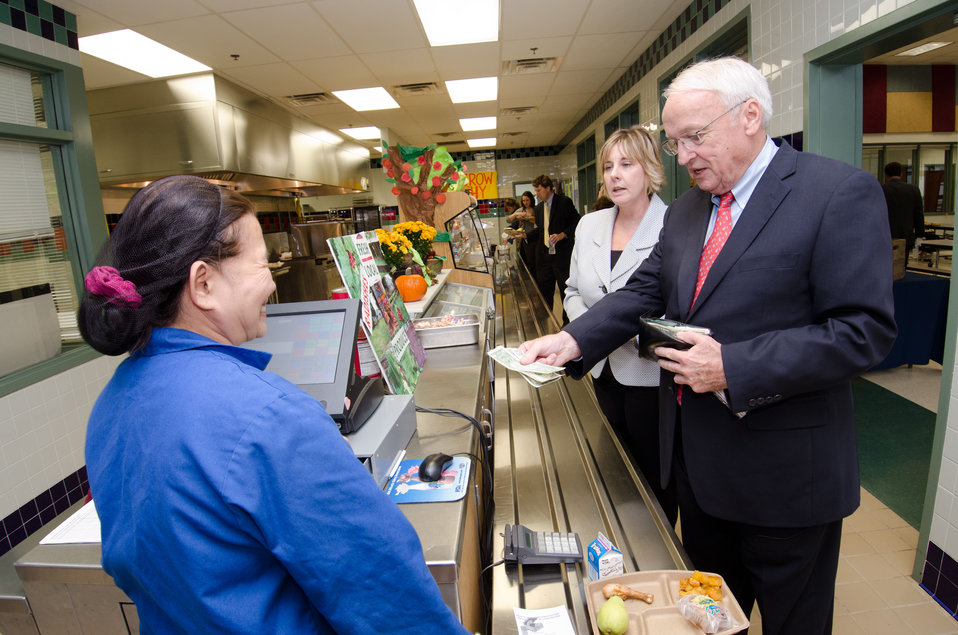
After students had their lunches, Under Secretary for Food, Nutrition and Consumer Services Kevin Concannon made his lunch choices and paid for his meal, during a National School Lunch Week event at Nottingham Elementary School in Arlington, VA, on Wednesday, October 12, 2011. (The schedule and menu were not altered for the event). Today's menu included roasted chicken, roasted butternut squash with dried cranberries, farm fresh mixed lettuce salad, turkey wraps, pita wedges, hot muffins, carrots, Asian pears and more.